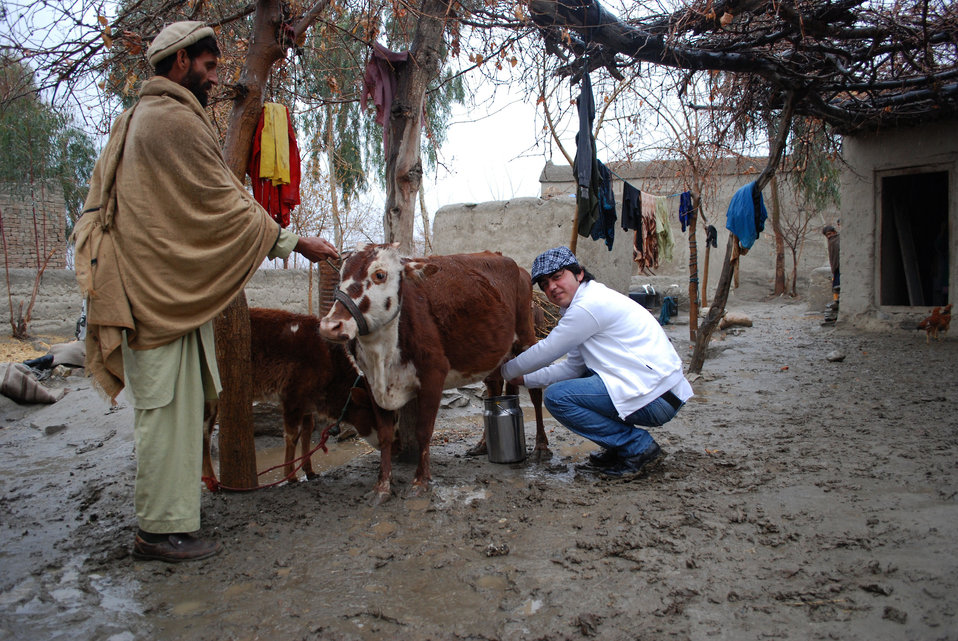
'On the Road' in Nangarhar Province